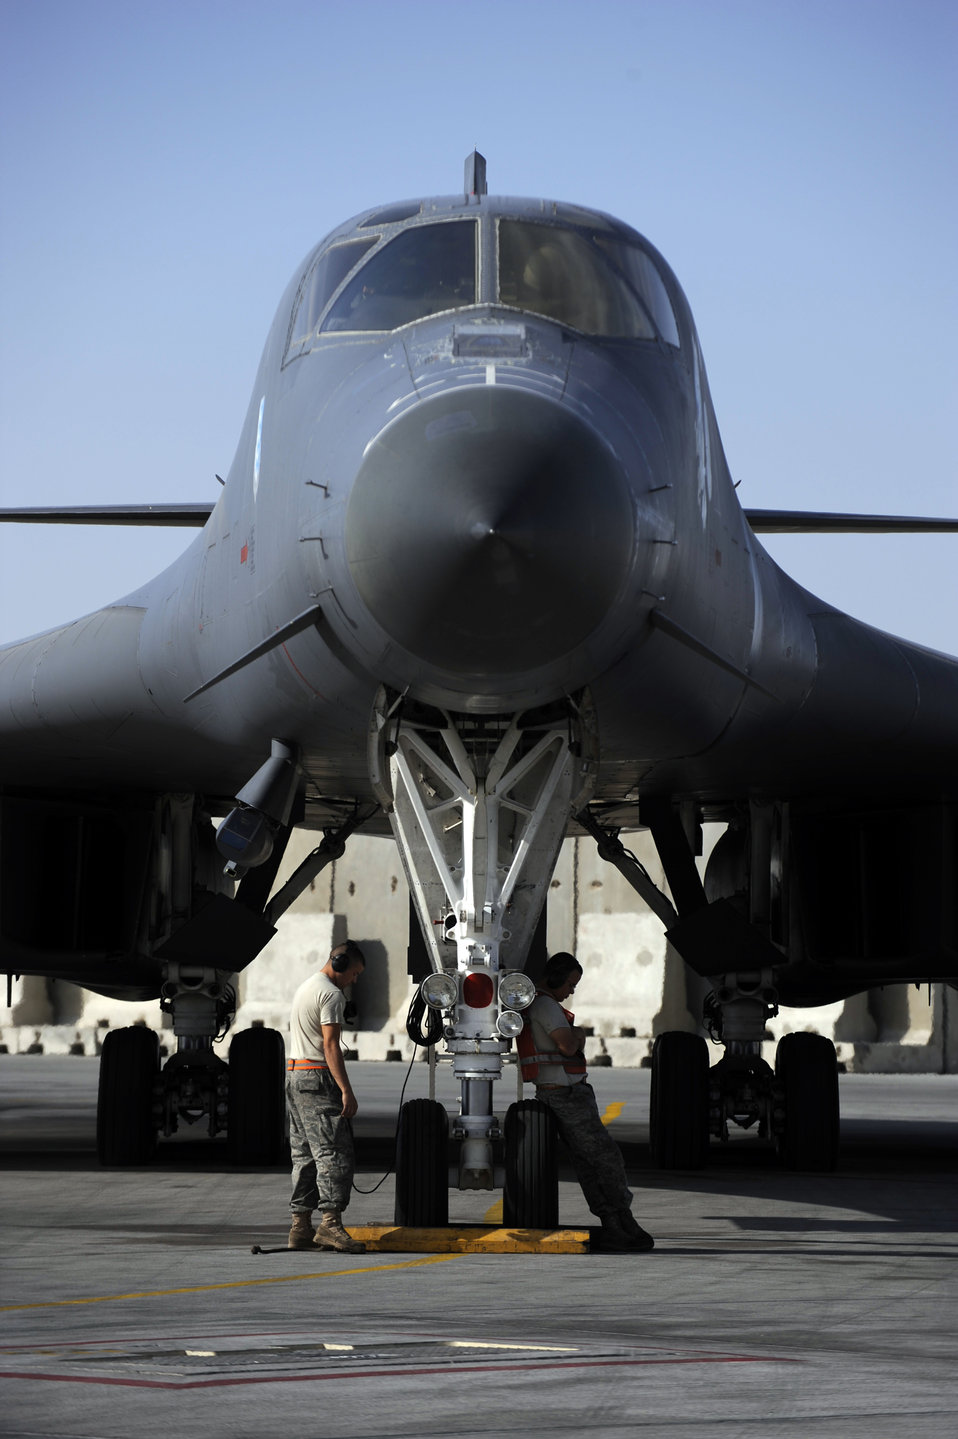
Operation Enduring Freedom

Crew chiefs wait for a B-1B Lancer aircrew to accomplish system checks prior to take off Jan. 23, 2010, at an air base in Southwest Asia. The crew chiefs are assigned to the 37th Aircraft Maintenance Unit.